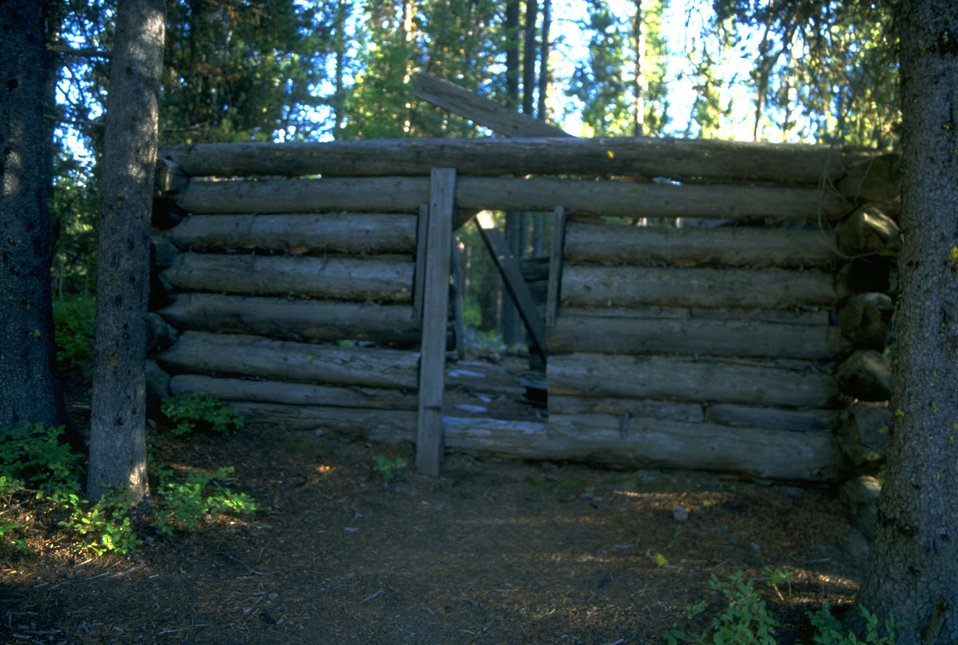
Garnet Back Country Byway--old cabin along the roadside